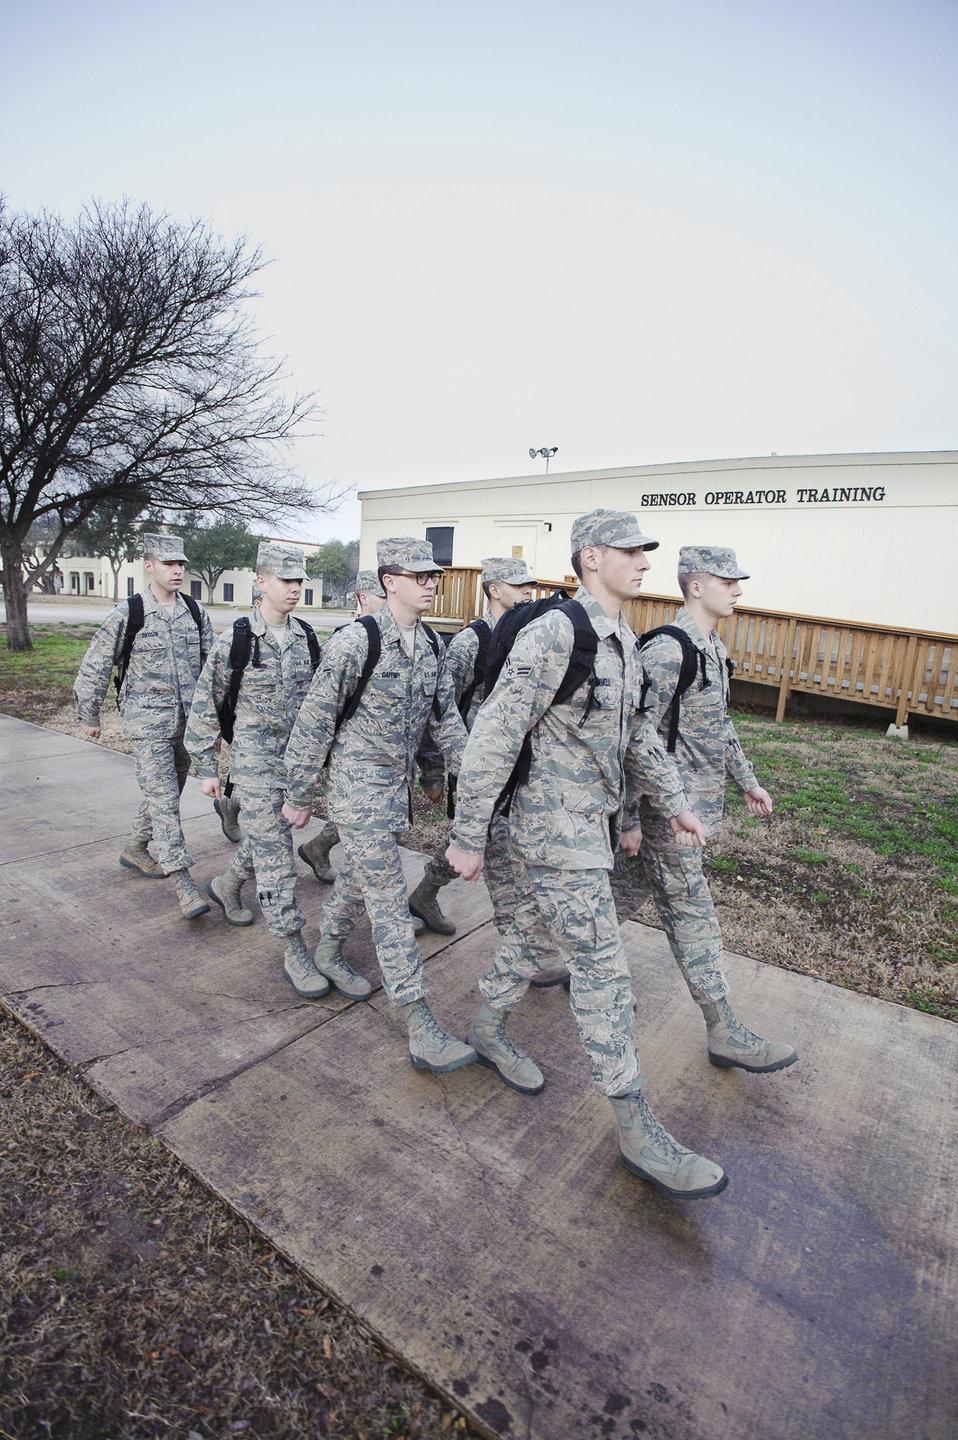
First group of BMT graduates begin sensor operator technical school

Nonprior service students march to class during the first week of the Basic Sensor Operator Course taught by 12th Operations Group, Det. 1, remotely piloted aircraft sensor operator instructors Jan. 20, 2010, at Randolph Air Force Base, Texas.